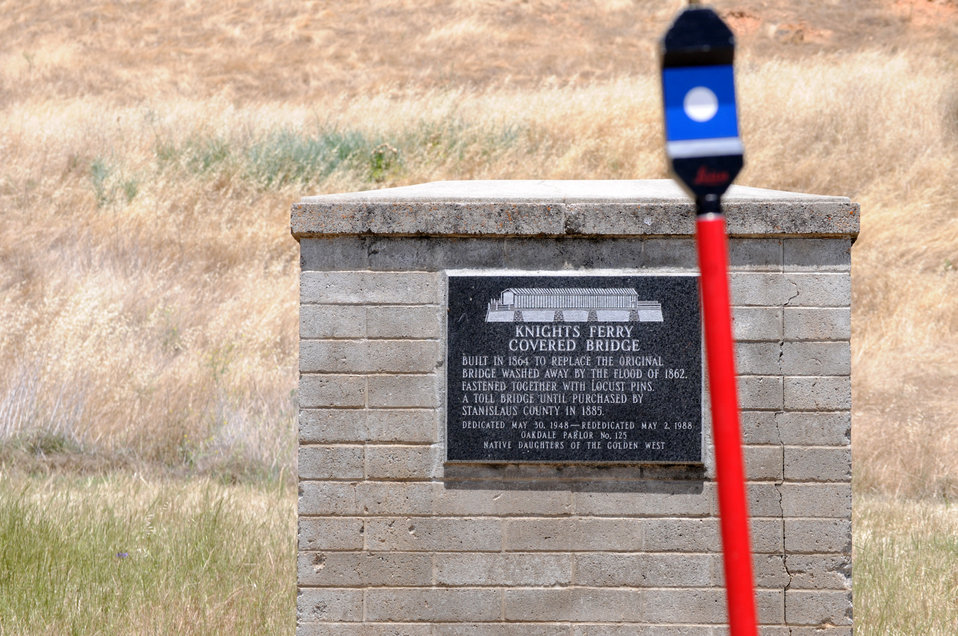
Knights Ferry Covered Bridge gets landmark status

A laser scanning target stands vigil over the plaque describing Knights Ferry Covered Bridge at the U.S. Army Corps of Engineers Sacramento District’s Stanislaus River Parks near Oakdale, Calif., June 15, 2011. Architects with the National Park Service’s Historic American Engineering Record visited the bridge in June to capture photographic and laser imagery of the bridge for inclusion as a historical landmark in the Library of Congress, expected in November.